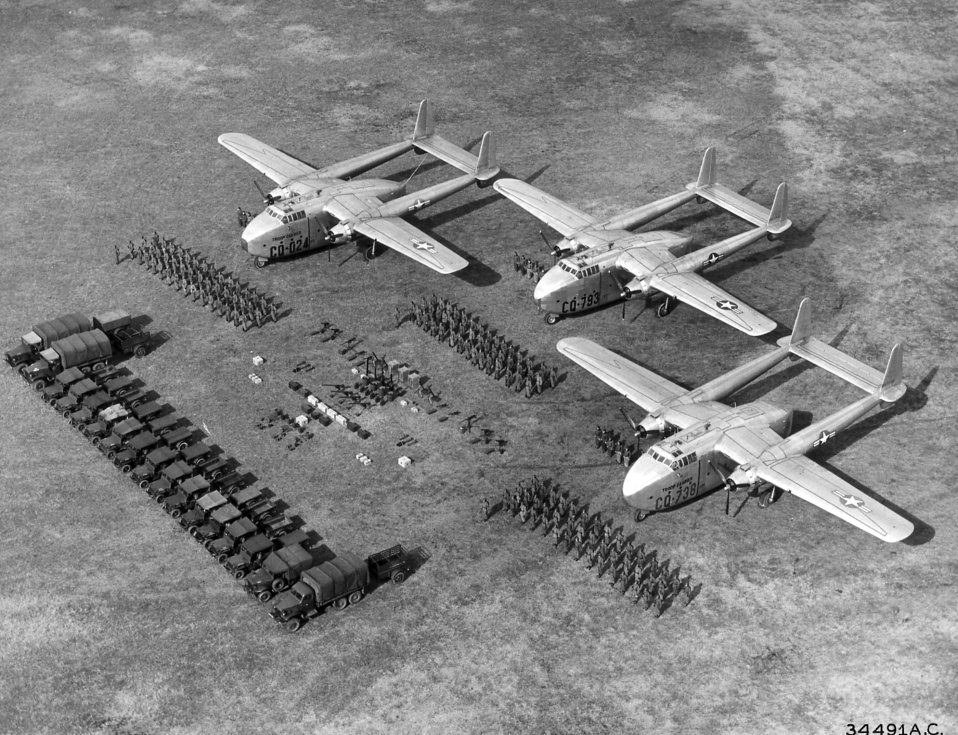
Three Fairchild C-82

1940's -- Three Fairchild C-82